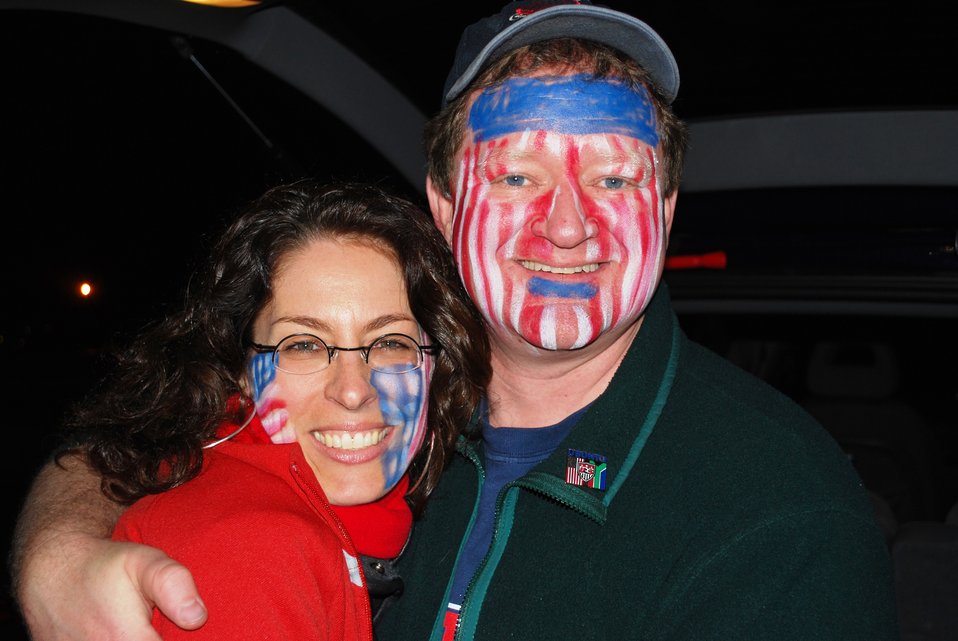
Hudson-Dean and Fellow American Show Their True Colors

U.S. Embassy Pretoria Press Attache Sharon Hudson-Dean and a fellow American show their true colors before the U.S. vs. England World Cup soccer match at Royal Bafokeng Stadium in Rustenburg, South Africa, on June 12, 2010.